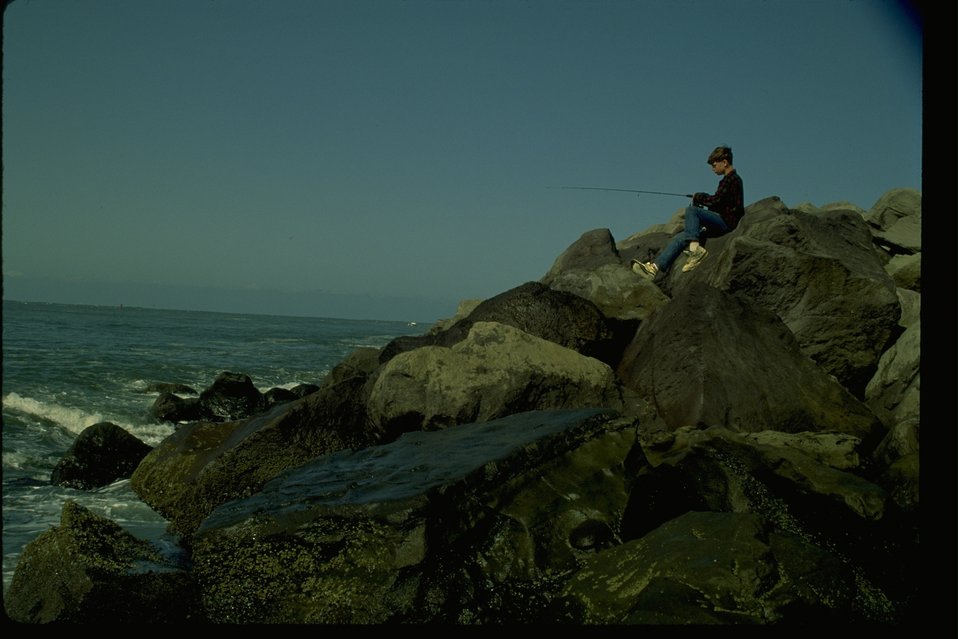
Fishing from the rocks at the North Spit.